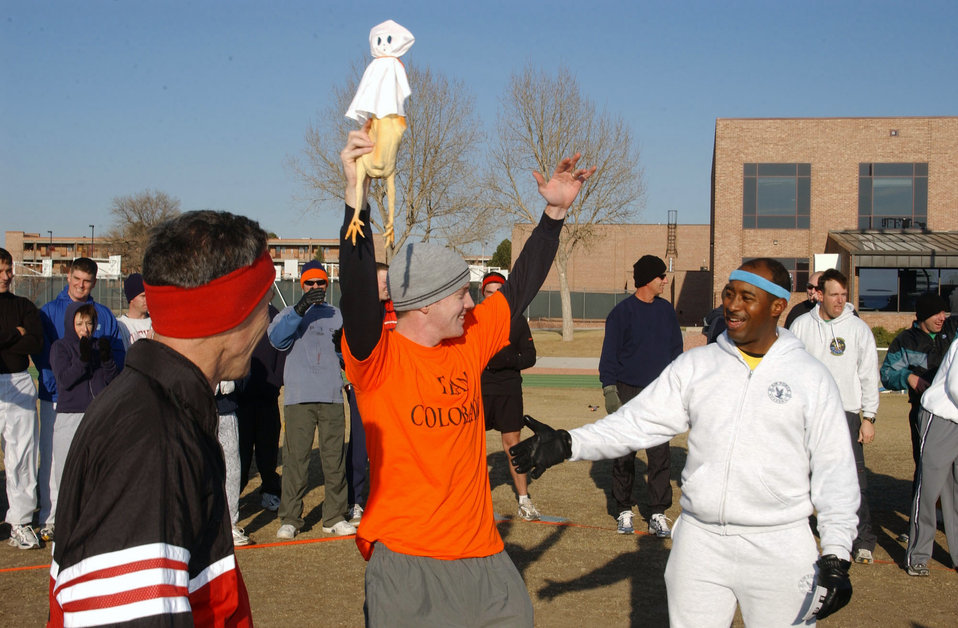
'The Amazing Race'

PETERSON AIR FORCE BASE, Colo. -- Second Lt. Luke Grogan celebrates winning the last place rubber chicken award during a group fitness competition. Space and Missile Systems Center Detachment 11 and Electronic Systems Center Detachment 5 airmen designed a course that took teams around Peterson to compete in a wide variety of challenges. Six teams participated in the race based on the television reality show,